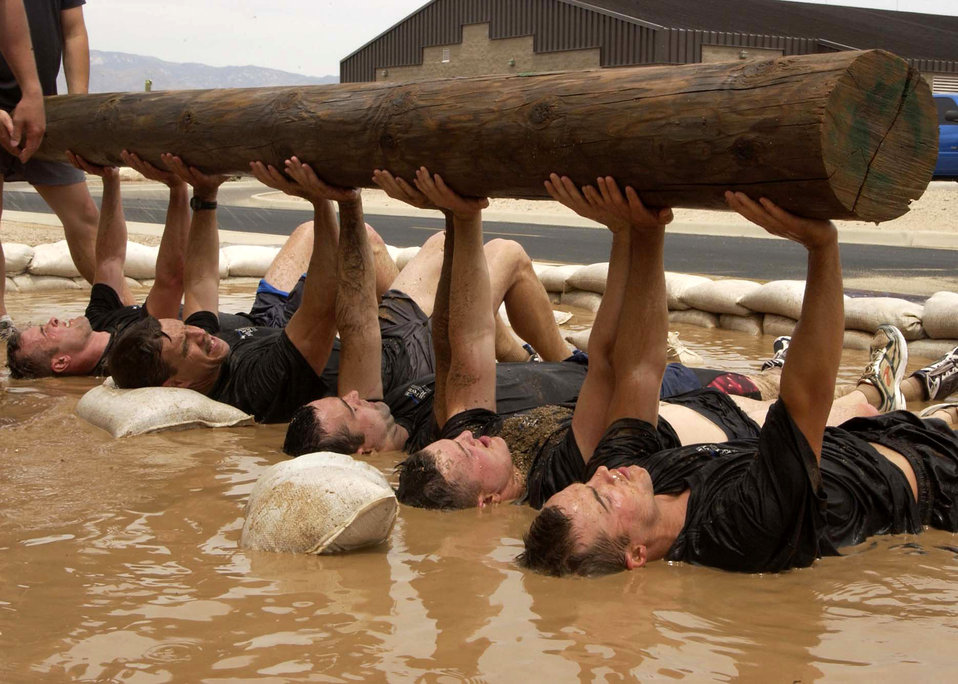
PJ selection process

Military and civilian applicants taking part in the 306th Rescue Squadron pararescue screening hoist a wooden log while lying in a mud pit at Davis-Monthan Air Force Base, Ariz., on Friday, April 21, 2006. Applicants must pass a timed 3-mile run, 1,500-meter swim, calisthenics and other tasks before proceeding to the 10-week indoctrination course at Lackland AFB, Texas.